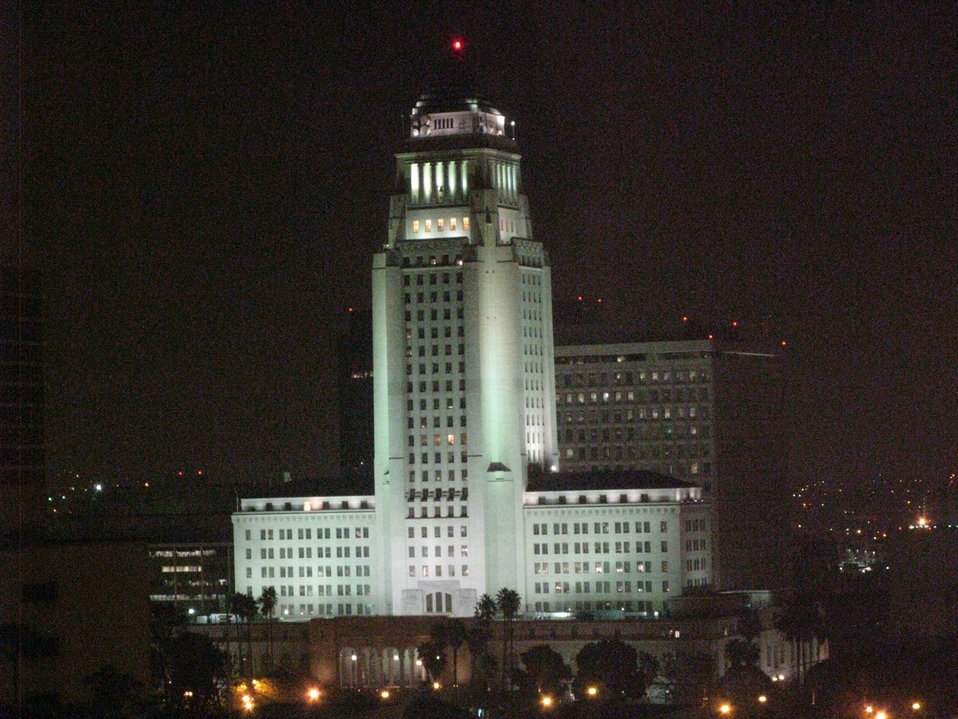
View of Los Angeles City Hall, taken from the Walt Disney Concert Hall.